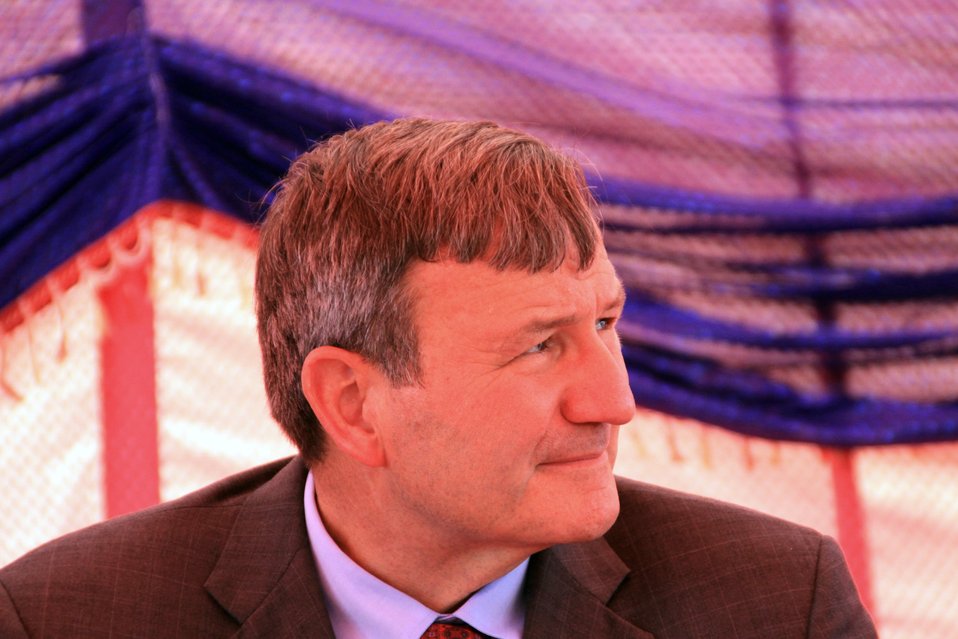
Badam Bagh Farm